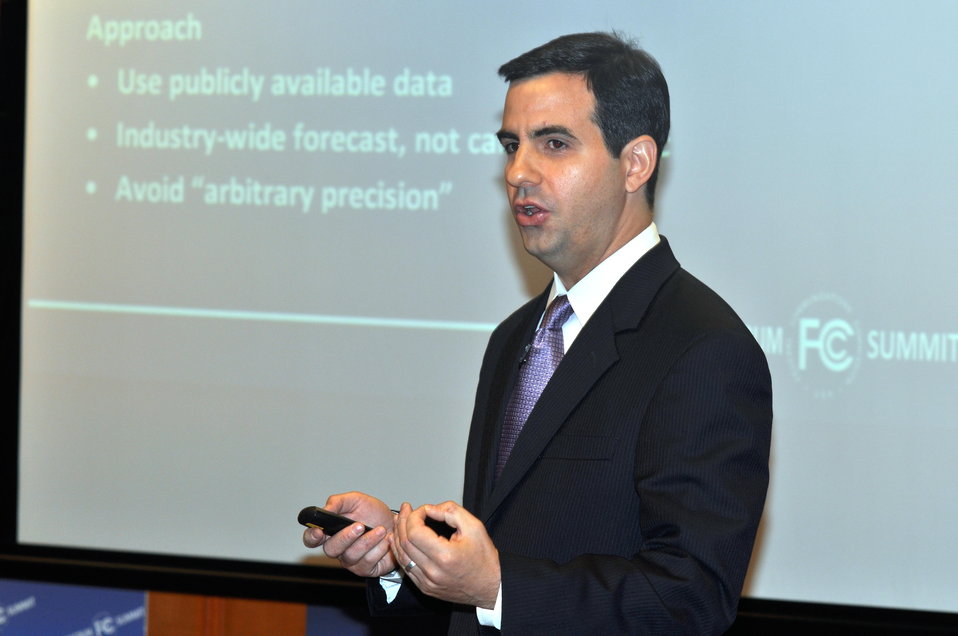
Spectrum Summit